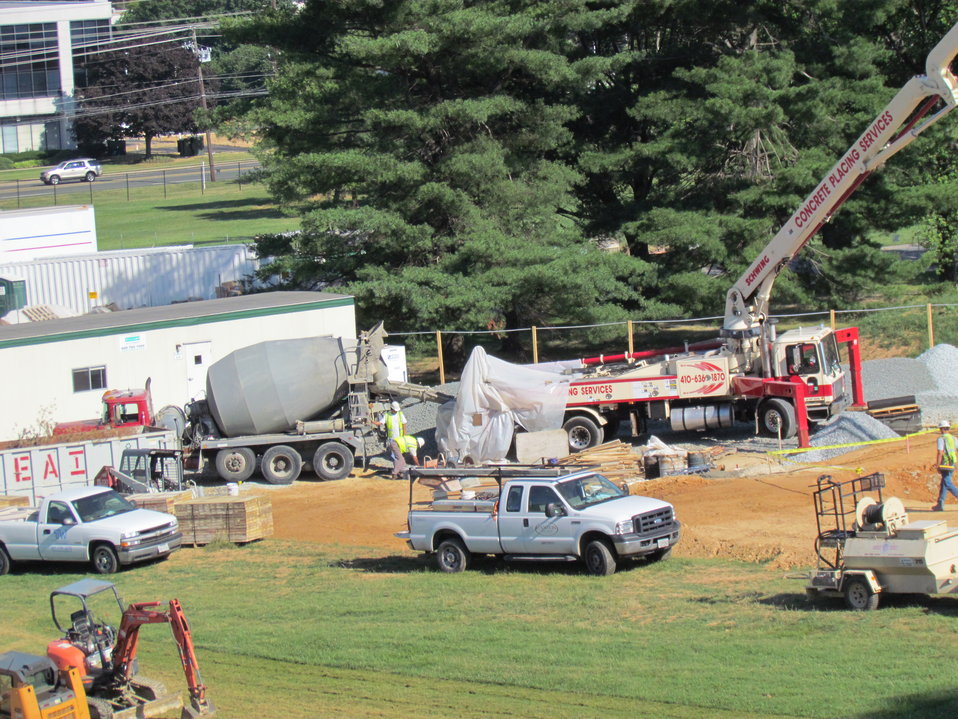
Net-Zero Energy Residential Test Facility - Photo showing concrete truck supplying concrete to concrete pumper which in turn supplies concrete to construction crew pouring basement slab.